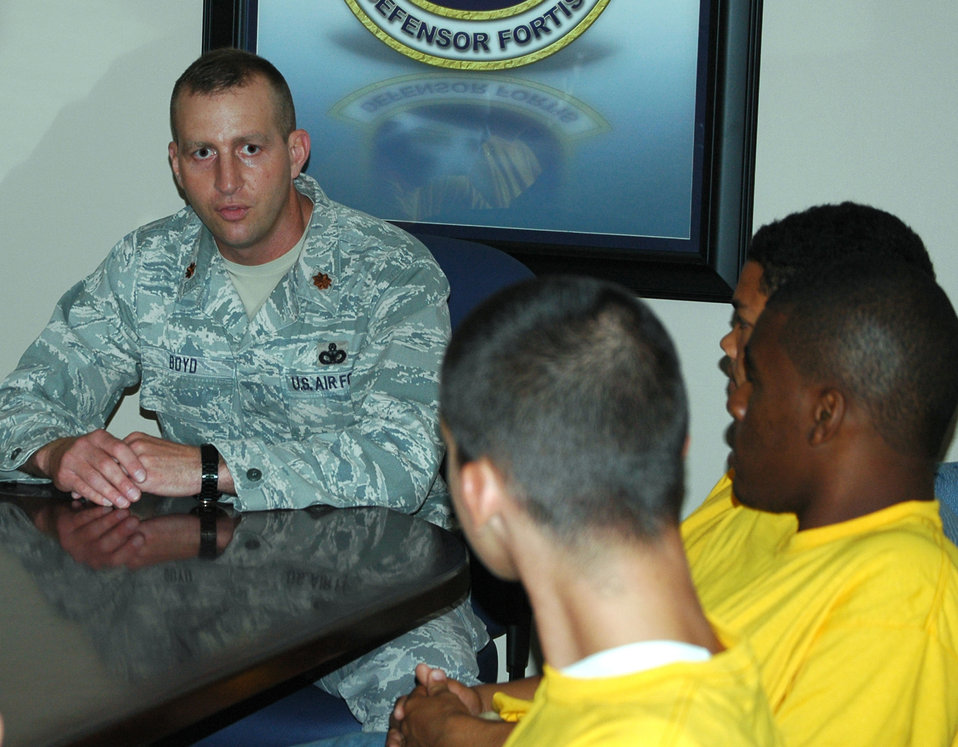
Airmen help Florida youth see inner potential

Maj. Woody Boyd talks to teenagers from the Liberty Juvenile Unit for Special Treatment facility about the mission of the 325th Security Forces Squadron May 5 at Tyndall Air Force Base, Fla. Airmen hosted the teens for a day, showed them the base and mentored the youths. Major Boyd is the 325th SFS commander.